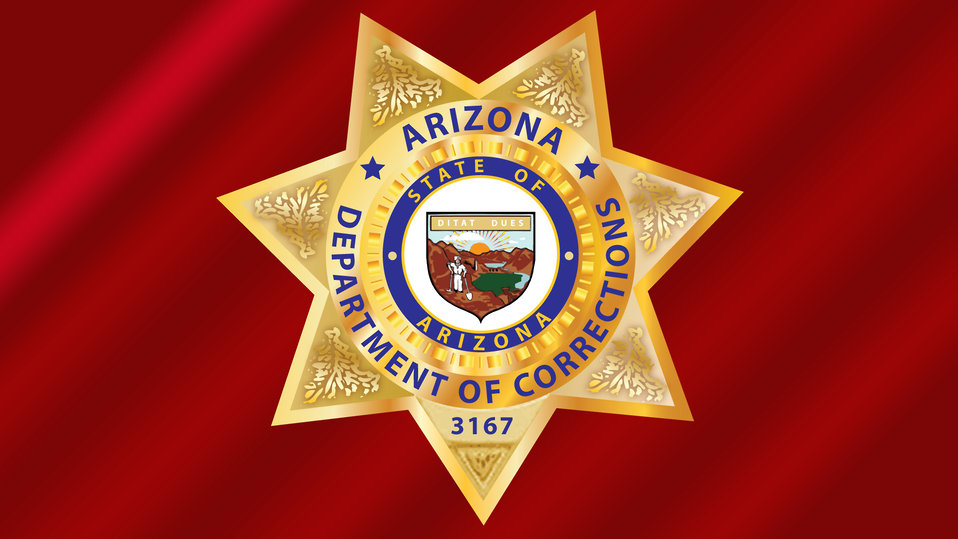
Badge

Adoc badge.